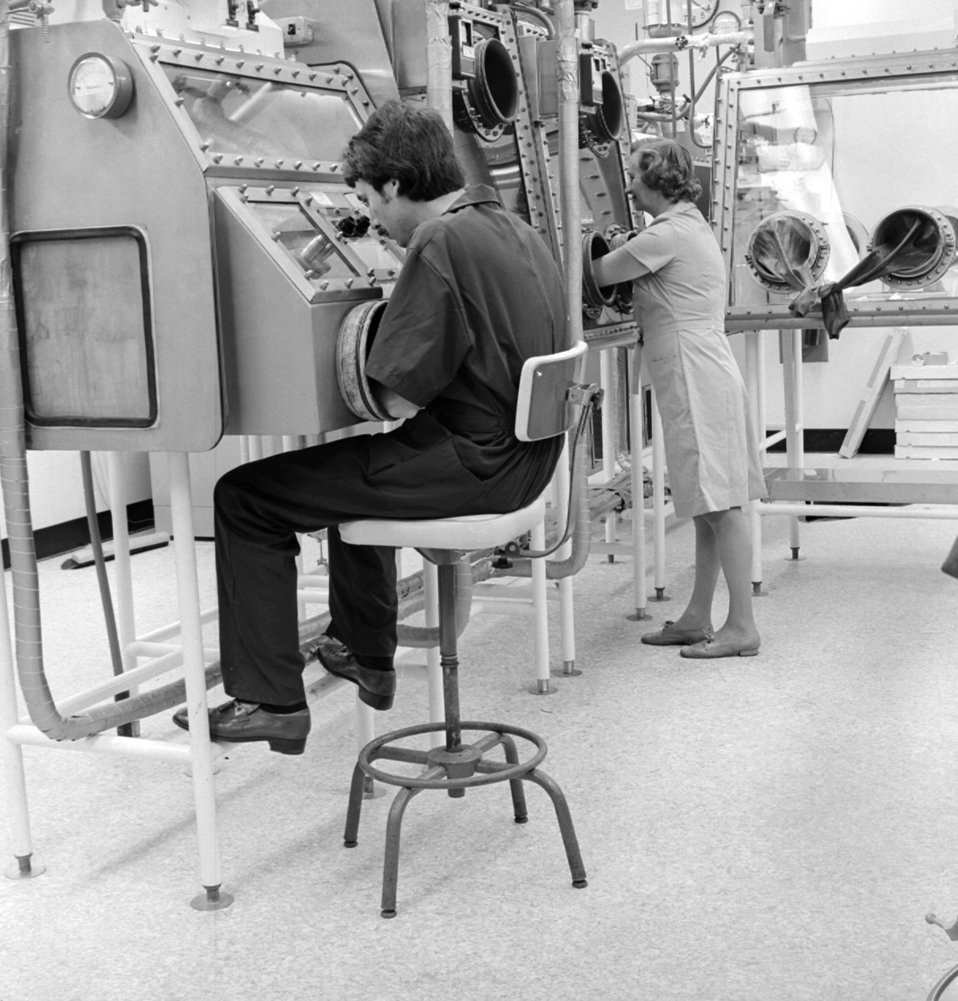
A staged photograph depicting microbiologists working with Maximum Containment lab equipment, 1975.